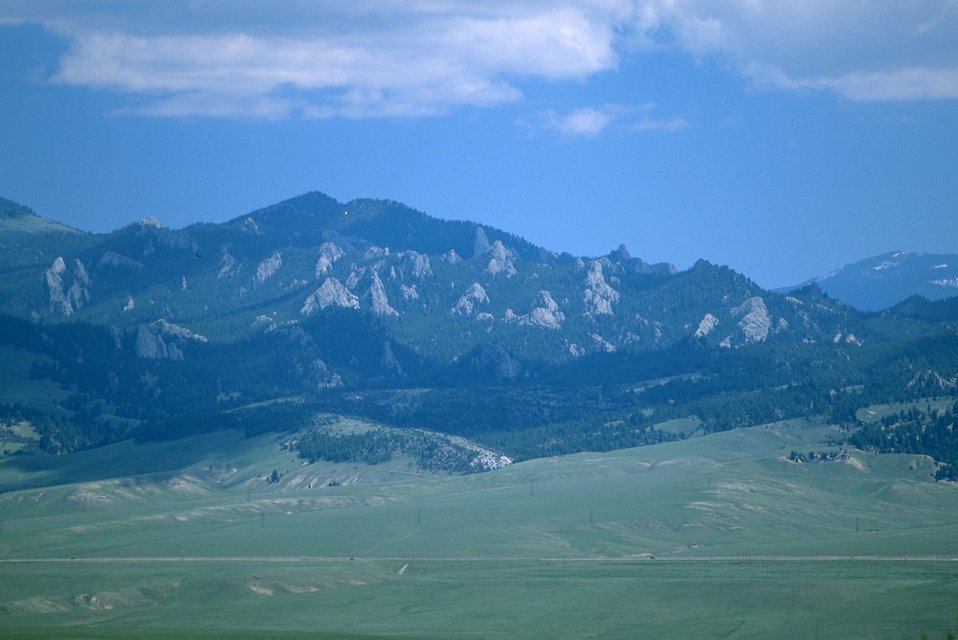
Scenic view of rock formations on a mountain side